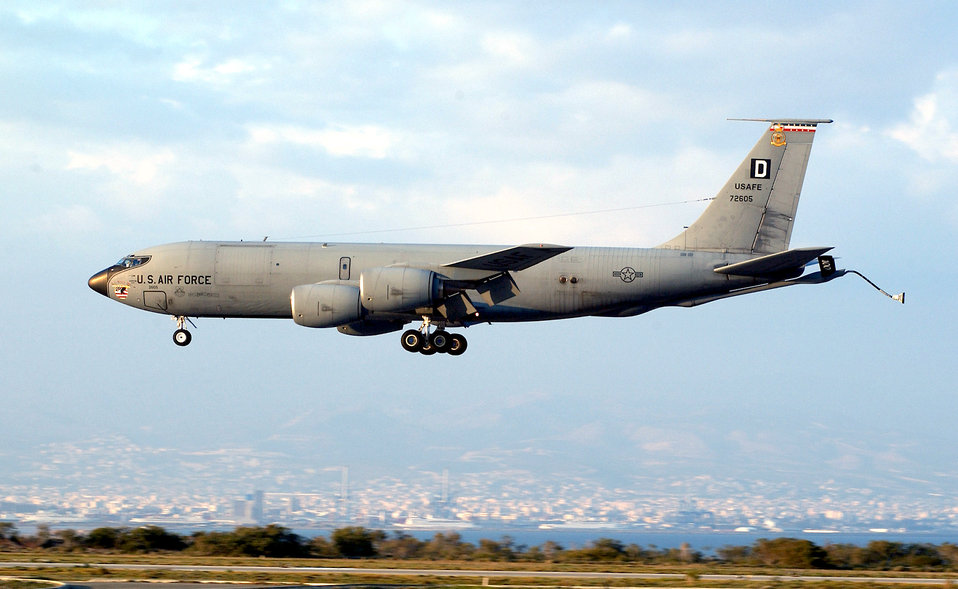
Fuel for the fight

OPERATION IRAQI FREEDOM -- A KC-135 Stratotanker from Royal Air Force Mildenhall, England, lands after a mission in the eastern Mediterranean in support of Operation Iraqi Freedom.